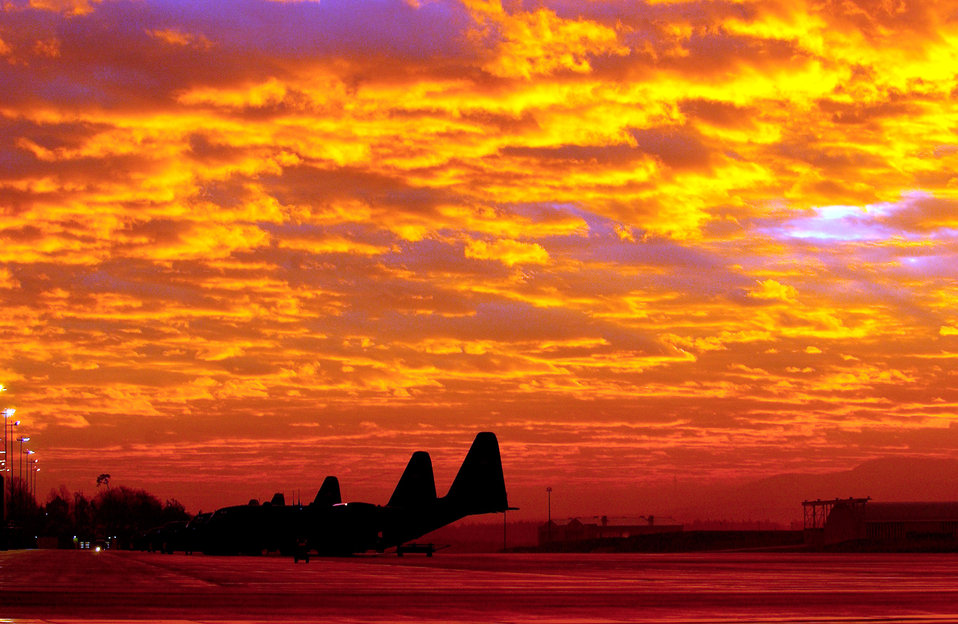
Fire in the sky

RAMSTEIN AIR BASE, Germany -- The sun rises and seems to set the sky on fire as several C-130 Hercules sit on the ramp here.